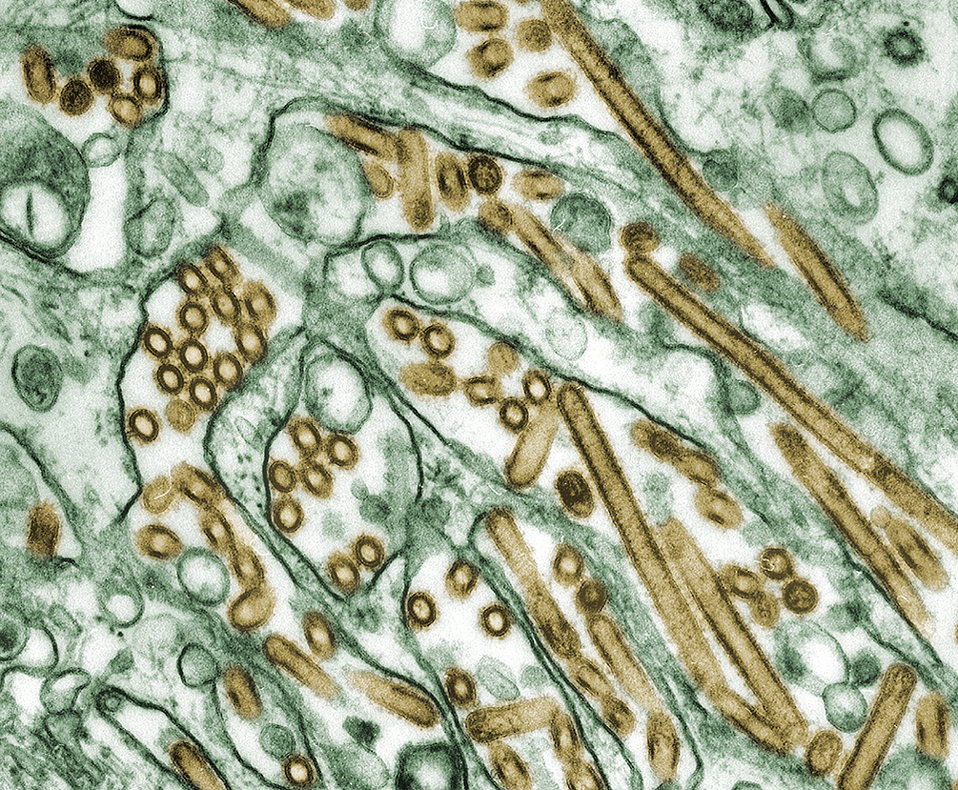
Colorized transmission electron micrograph of Avian influenza A H5N1 viruses (seen in gold) grown in MDCK cells (seen in green).